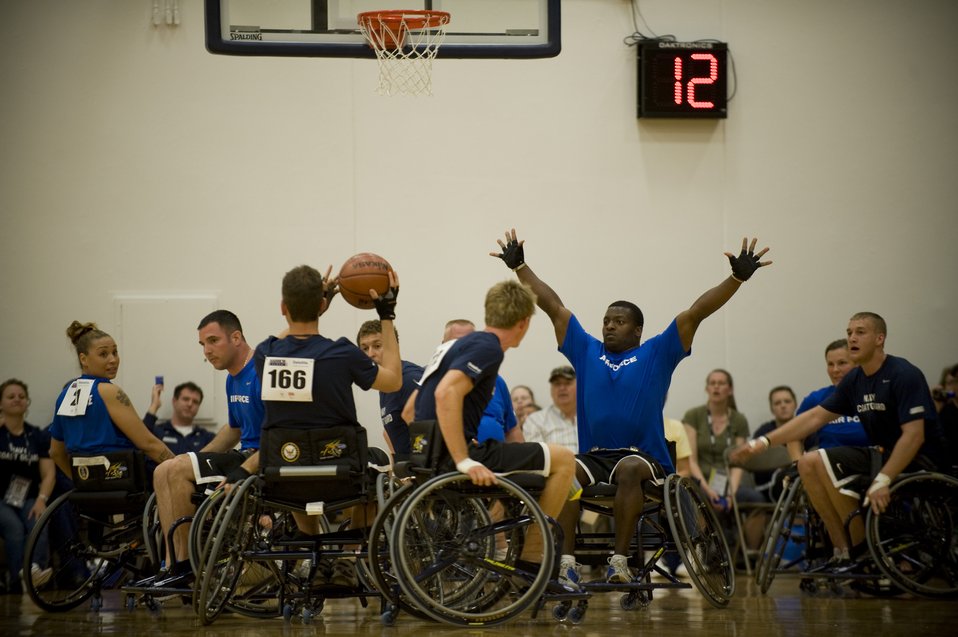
Warrior Games BasketBall

Air Force wheelchair basketball team members scramble as a Navy team member prepares to shoot during their game May 17, 2011, at the 2011 Warrior Games in Colorado Springs, Colo. The Navy beat the Air Force 23-14 and next will face the Marine Corps. The Air Force team plays the Army.